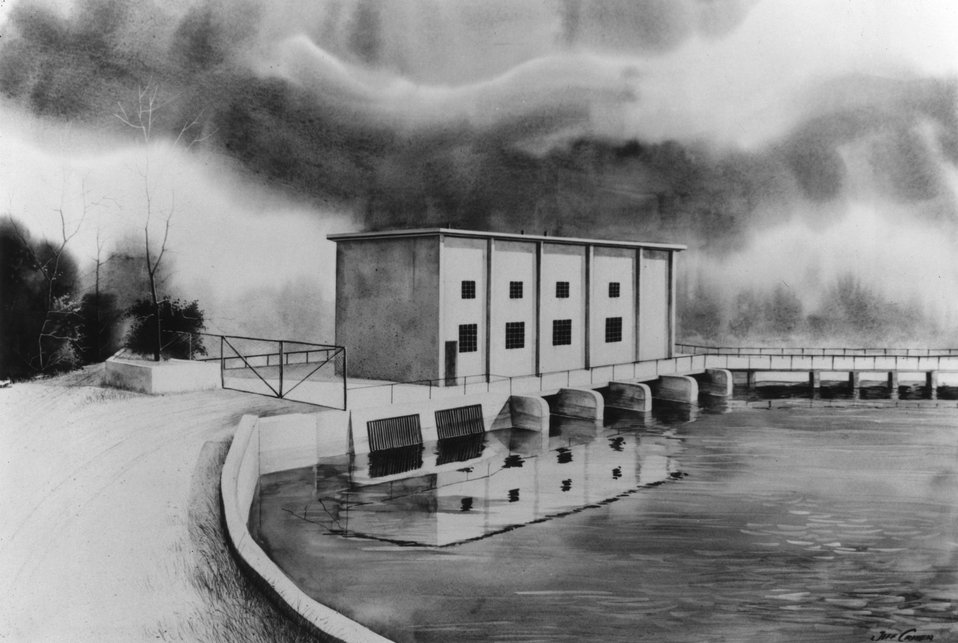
This artist's drawing of the lower power plant contrasts the old and the new. c. 1978